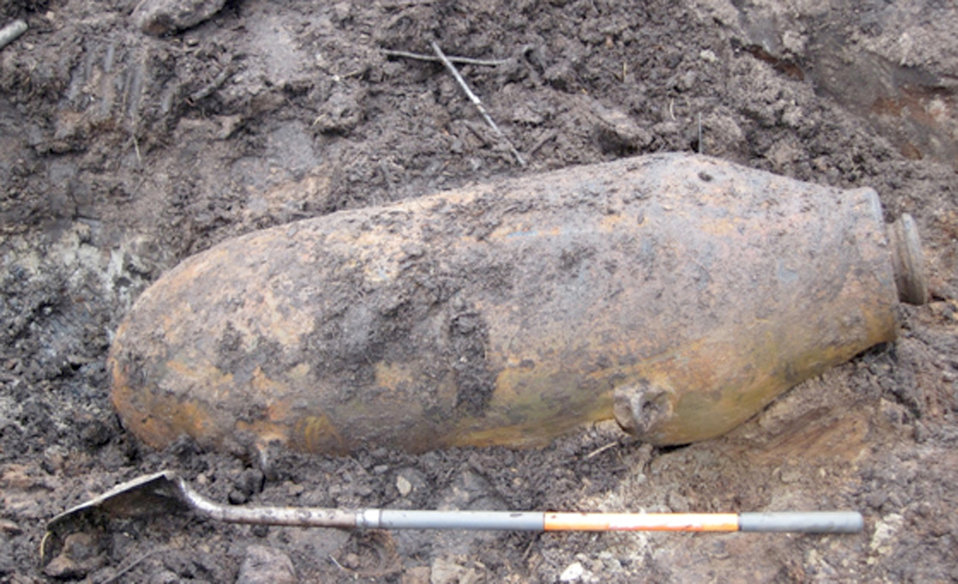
2,000-pound bomb found in New Boston

A 2,000-pound general purpose bomb was recently discovered in the drained portion of Joe English Pond at New Boston Air Force Station, N.H. The bomb was intentionally detonated on site, under the oversight of Army Corps of Engineer safety representatives.